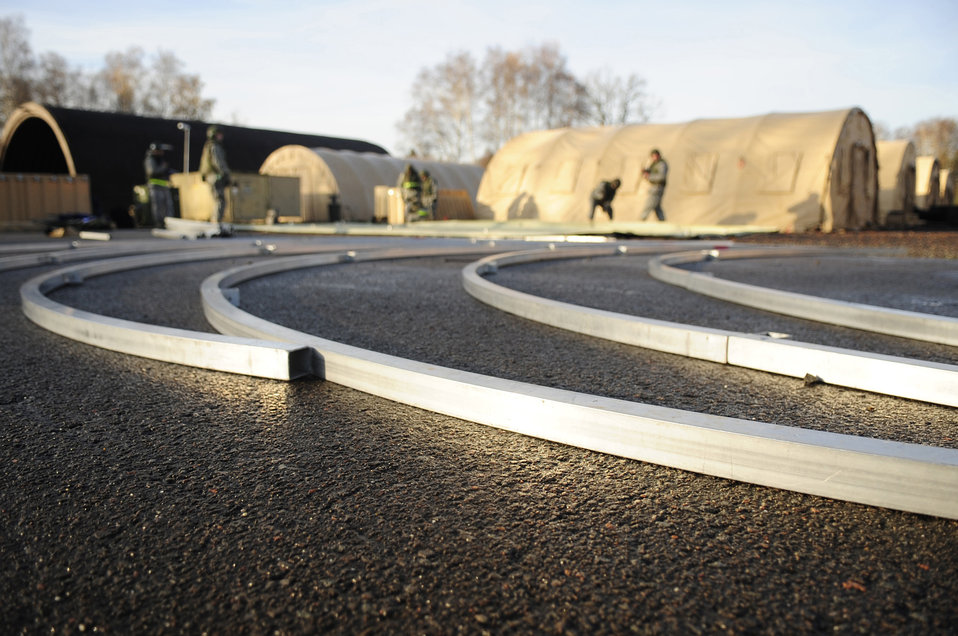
Airmen from across the world participate in Silver Flag

Airman lay supports for a tent in preparation of tent build-up during a practical application portion of Silver Flag Nov. 20, 2010, at Ramstein Air Base, Germany. Silver Flag is a weeklong, ongoing training program that invites Airmen from all over the planet to participate. Members of NATO forces have also been invited to attend. Silver Flag combines classroom and practical application exercises to prepare Airmen for deployment.